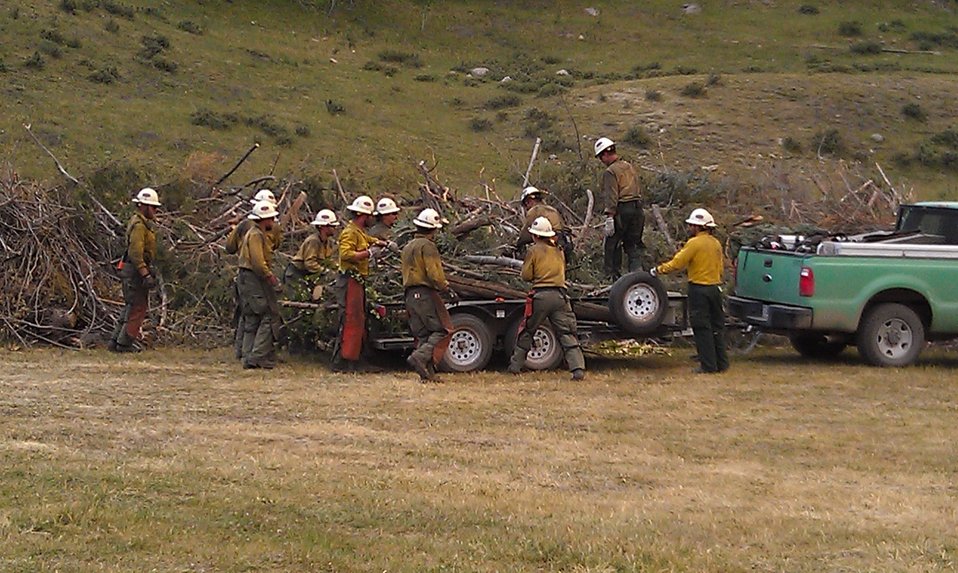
Firefighters clear brush at the Little Sand Wildfire in the San Juan National Forest near Pagosa Springs, CO, on Thursday, June 14, 2012. The wildfire was started by a lightening strike on May 13, 2012. The fire is in rugged and inaccessible terrain, north of the Piedra River, and is currently estimated at 14,224 acres with 30% containment as of June 20, 2012.